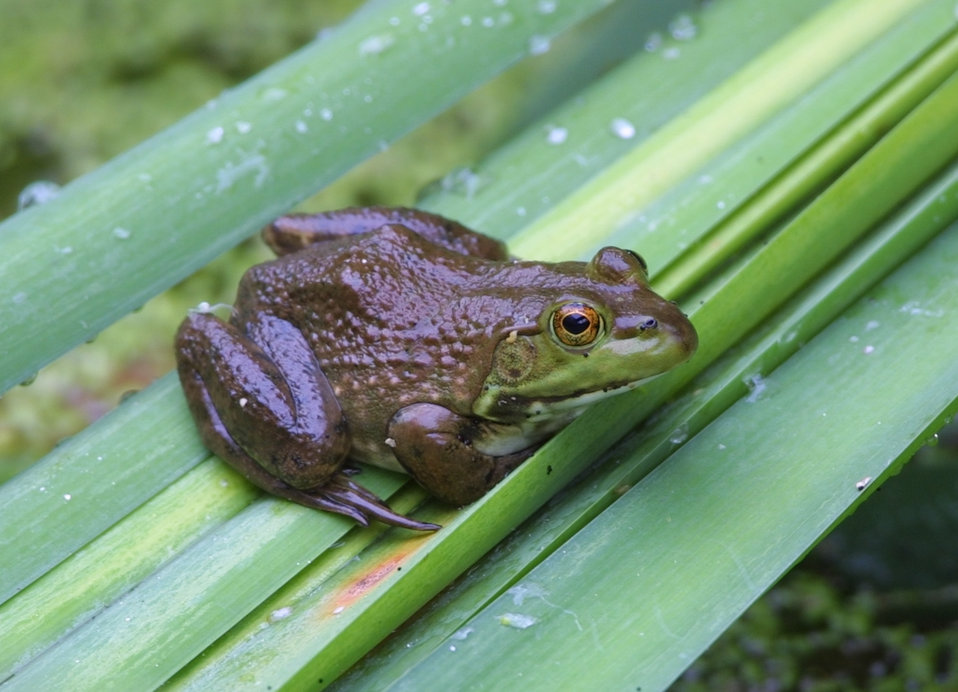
Bull Frog

Healthy Bull frog at John Heinz National Wildlife Refuge in Philadelphia, Pennsylvania.